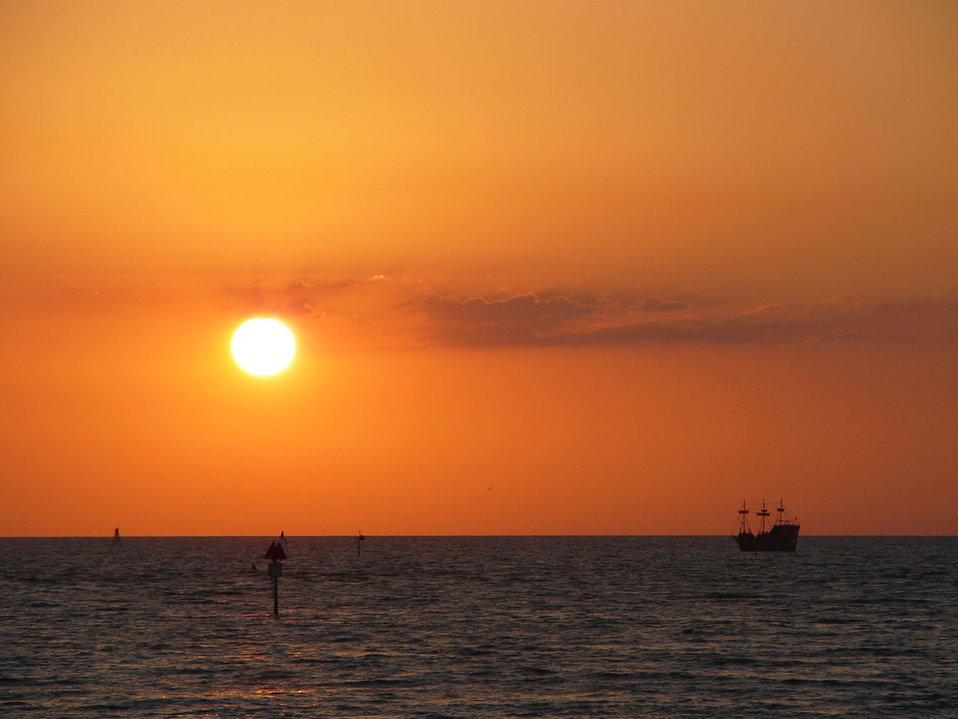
Sunset over the gulf of mexico

Ship sailing into the sunset.